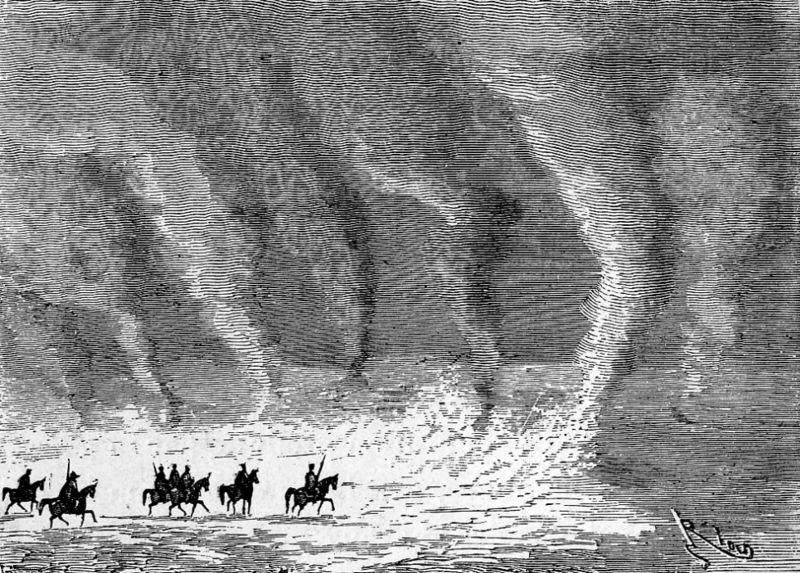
An ilustration from the novel 'In Search of the Castaways; or Captain Grant's Children' by Jules Verne drawn by Édouard Riou. Polski: Ilustracja powieści Juliusza Verne'a 'Dzieci kapitana Granta' autorstwa Édouarda Riou. Français : 'Les Enfants du capitaine Grant', Édouard Riou.